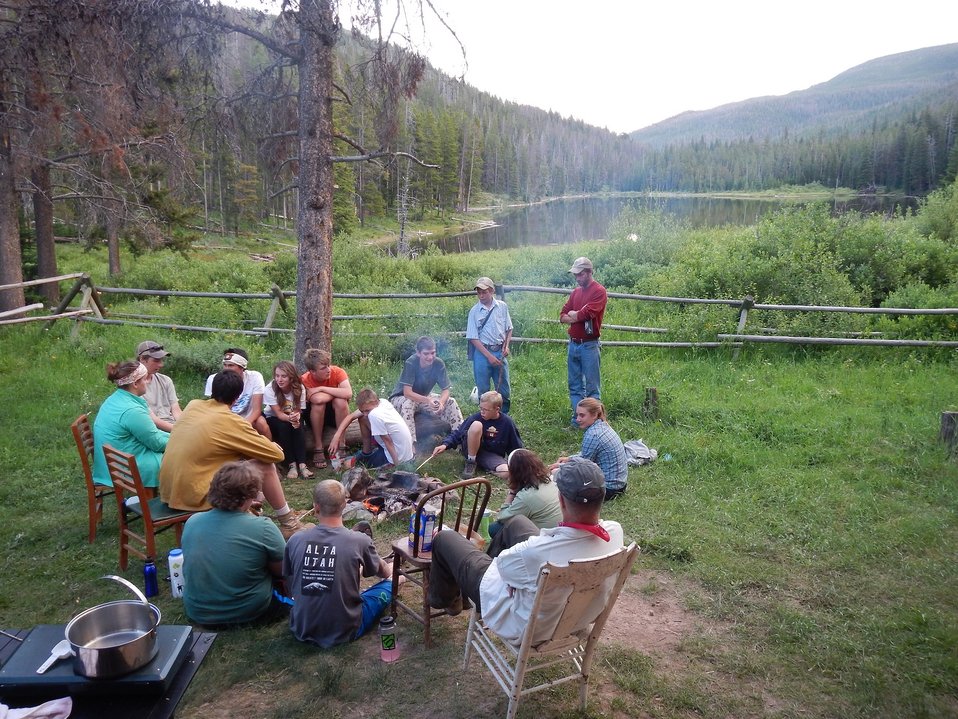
Youth Forest Monit Photo 4

After a long day of monitoring in the Scapegoat Wilderness, students sit around the campfire at Webb Lake Ranger Station.